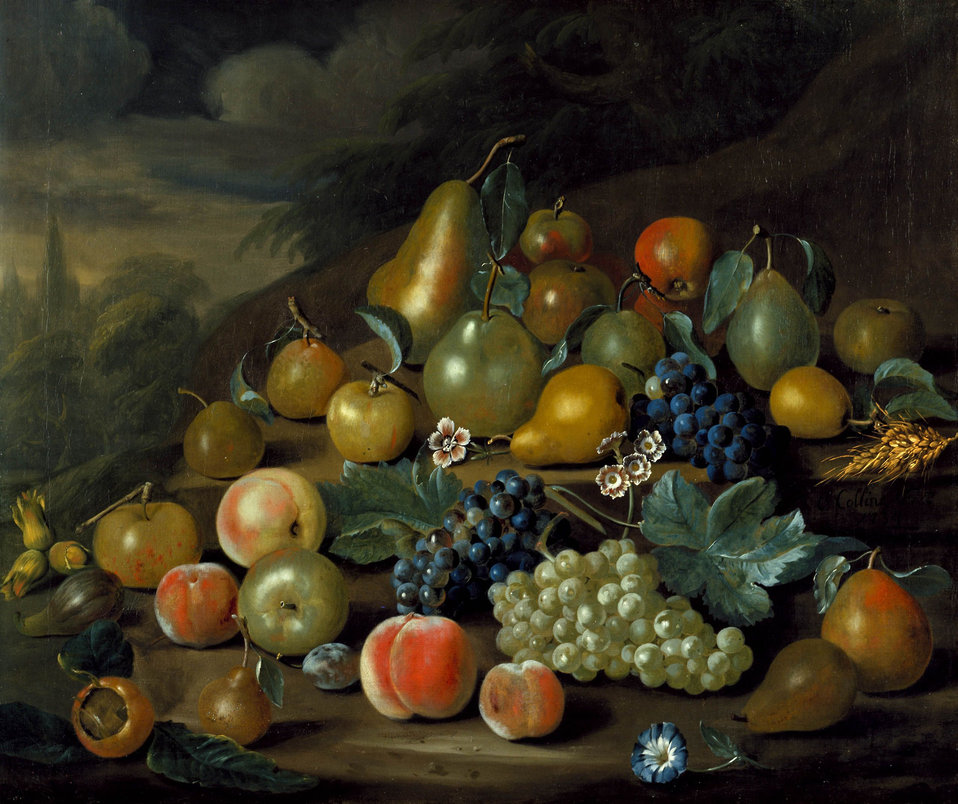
A Still Life of Pears, Peaches and Grapes) by Charles Collins